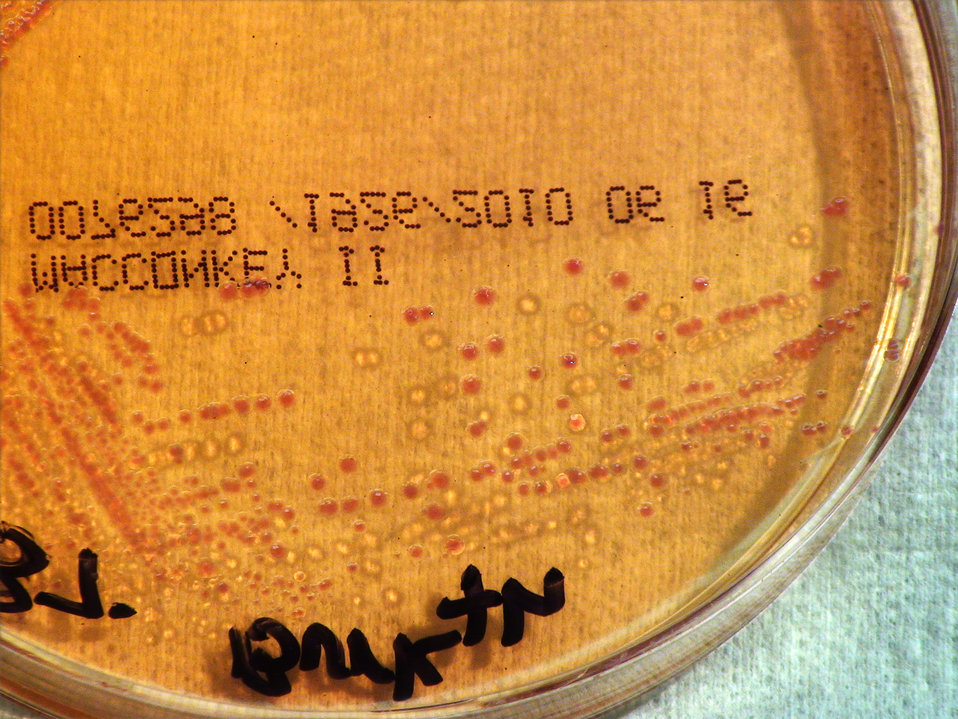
As a closer view of PHIL 12405, this photograph depicts the colonial morphology displayed by Gram-negative Burkholderia thailandensis bacteria, which was grown on a medium of MacConkey agar, for a 48 hour time period, at a temperature of 37�C. See both PHIL 12410 and 12411, for views of this bacterial specie, grown on the same medium, for the same amount of time, however, at a greater temperature of 42�C, and note that PHIL 12419 and 12420 depict the same bacterial specie grown on the same media and at the same temperature, but for only 24hrs. Take a look at PHIL 12427 and 12428, which depicts B. thailandensis grown on the same medium, but at a greater temperature (42�C), and only half the time (24hr).